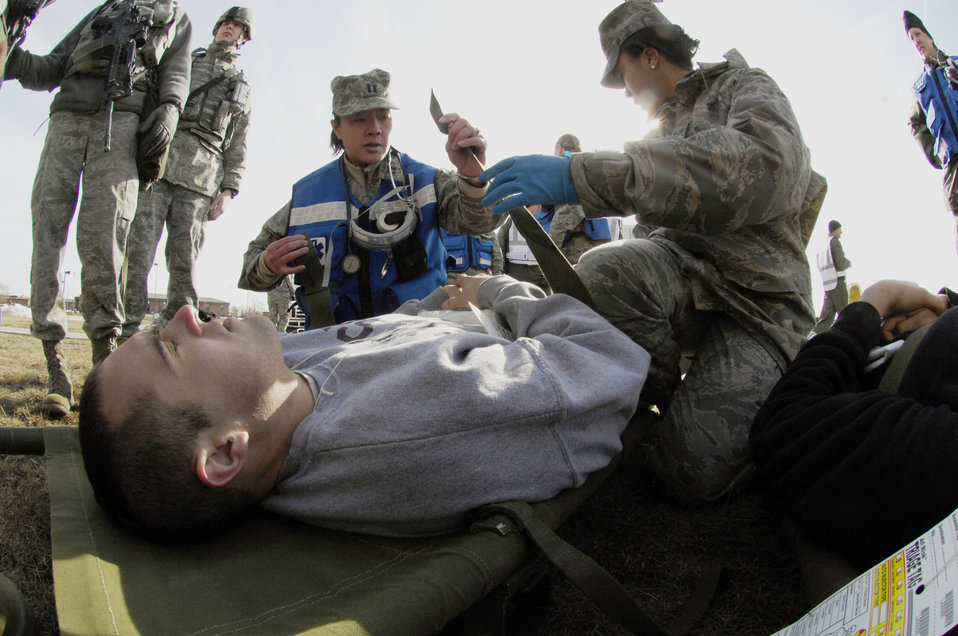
Shooter, sirens prep Minot Airmen

Capt. Tomao Rose and Senior Airman Erika Jenkins assess and treat simulated victim Airman 1st Class Thomas Kennedy during a major accident response exercise March 26, 2010, at Minot Air Force Base, N.D. The exercise prepared base members for possible real-world situations as well as testing communication and emergency procedures. Captain Rose and Airman Jenkins are assigned to the both 5th Medical Operations Squadron. Airman Kennedy is assigned to the 91st Missile Maintenance Squadron.